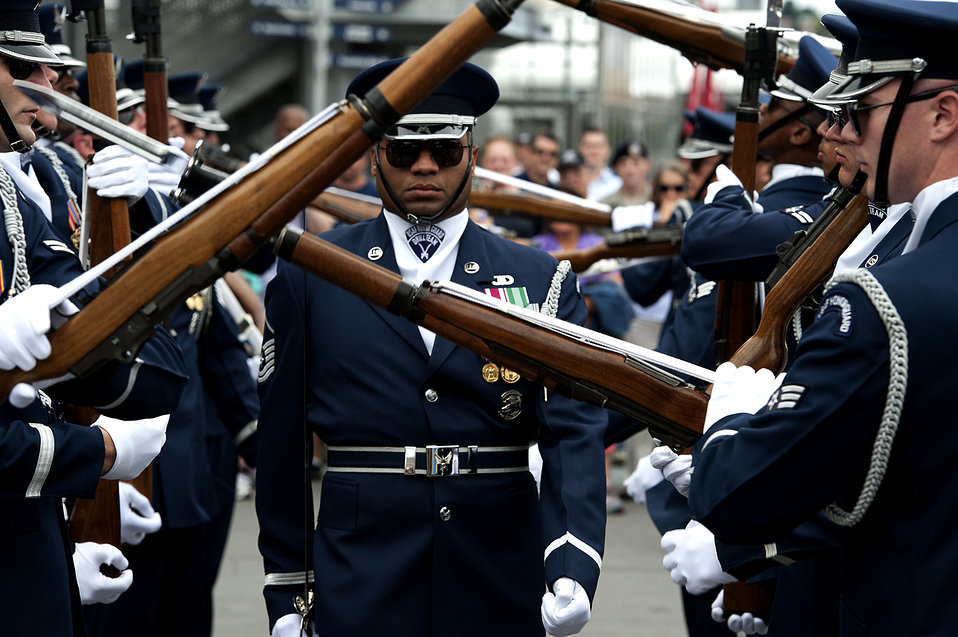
2012 Air Force Week NYC

A member of the Air Force Drill Team walks through twirling rifles during a performance at Air Force Week 2012 in New York City on Aug. 19.